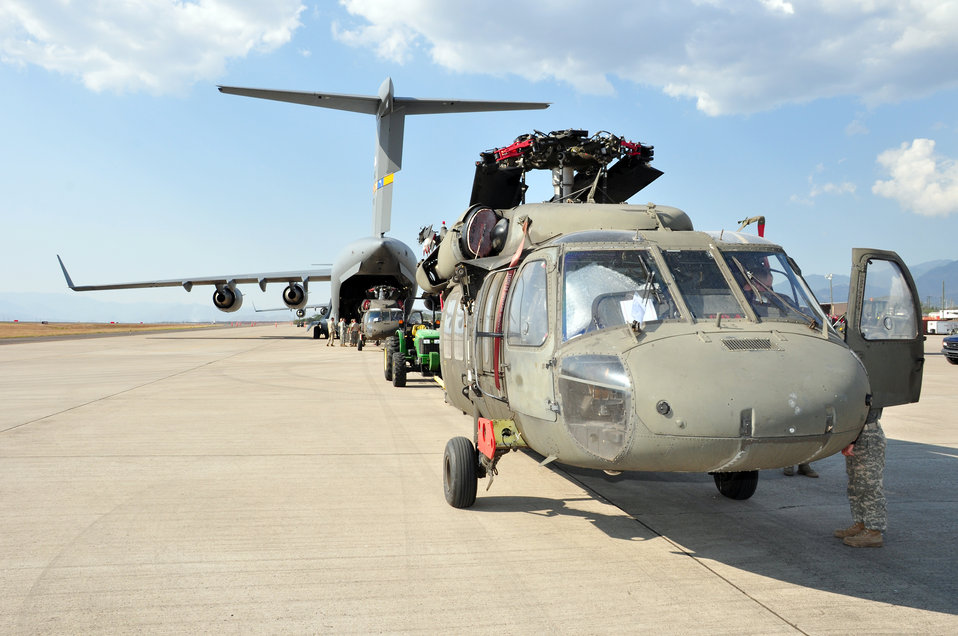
American servicemembers, helicopters deploy to Haiti

Joint Task Force- Bravo members load a C-17 Globemaster III with UH-60 Blackhawks and equipment March 20, 2010, at Soto Cano Air Base, Honduras. Soto Cano AB officials sent 40 servicemembers and four UH-60 Blackhawks to support Joint Task Force-Haiti airlift operations as part of the disaster relief mission Operation Unified Response.